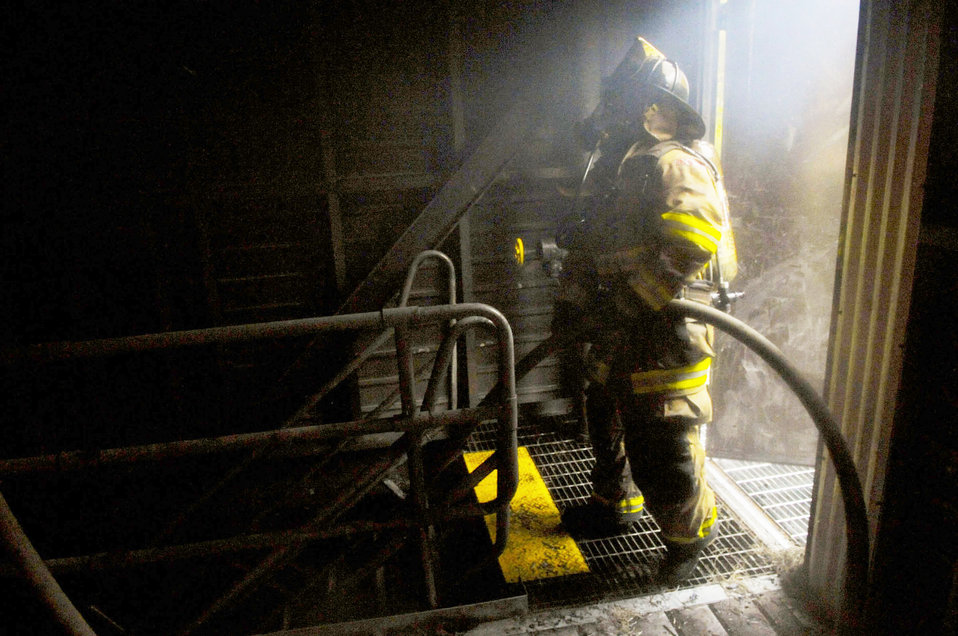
Joint fire fight with Joint Base Andrews and D.C. Fire Department

District of Columbia firemen recruit waits with hose in hand for orders to move to his next position. The training facility here on Joint Base Andrews allowed D.C. fire school instructors to evaluate a team?s ability to move quickly and effectively from ground level, to multiple levels, in a building in order to properly extinguish fires.